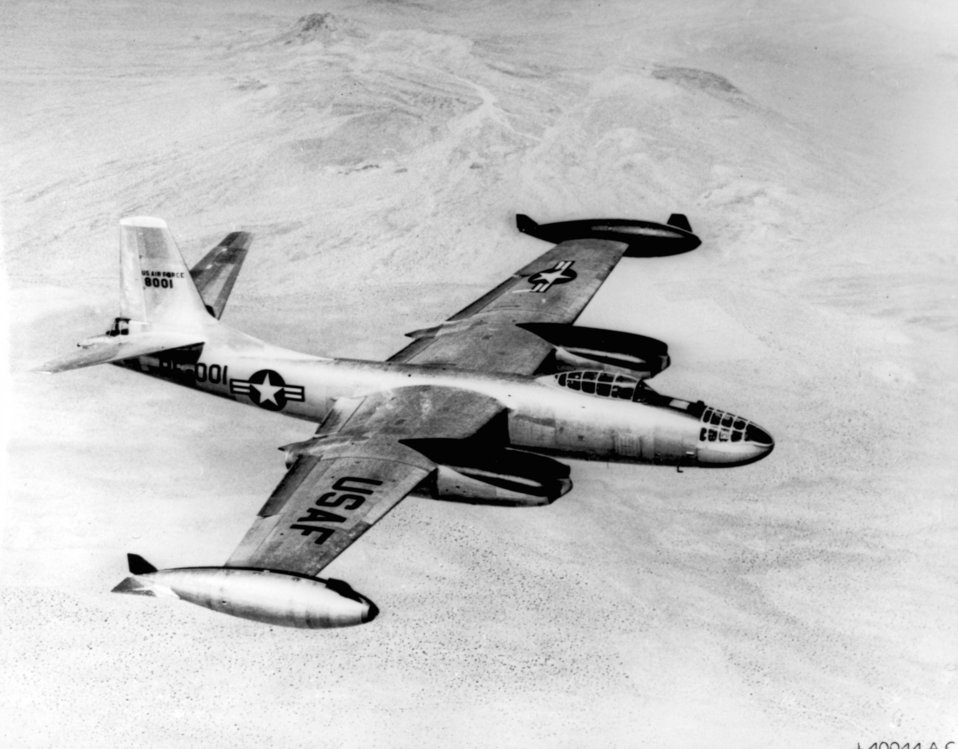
North American B-45C Tornado

1940's -- More reach is given to the long striking arm of the U.S. Air Force North American B-45C Tornado four-jet bomber, a